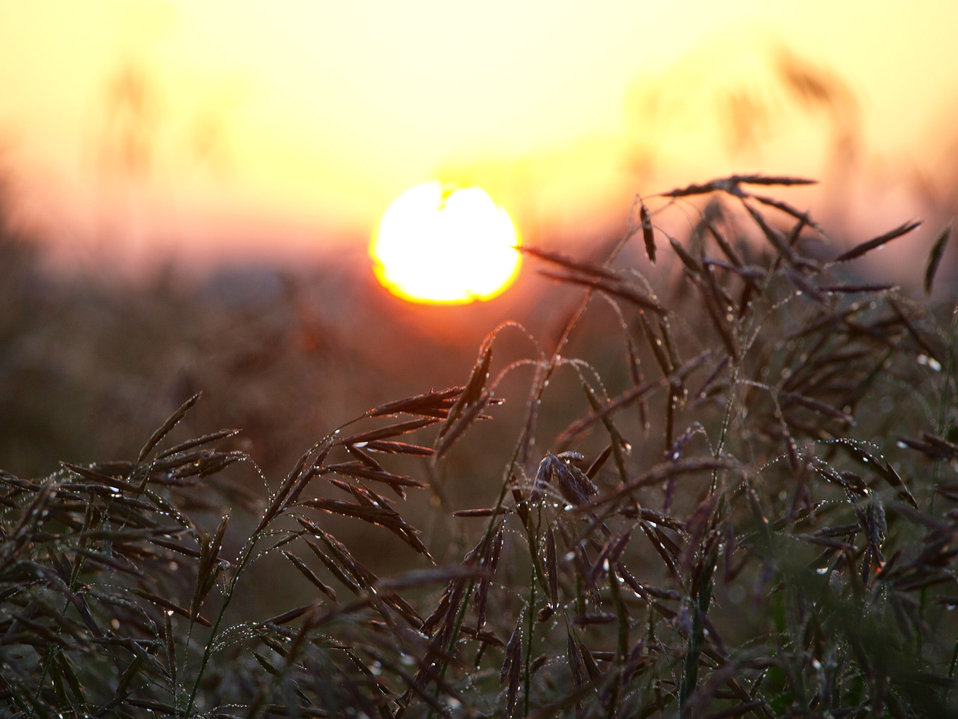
Sunrise and wheat

Sunrise, 5 am.